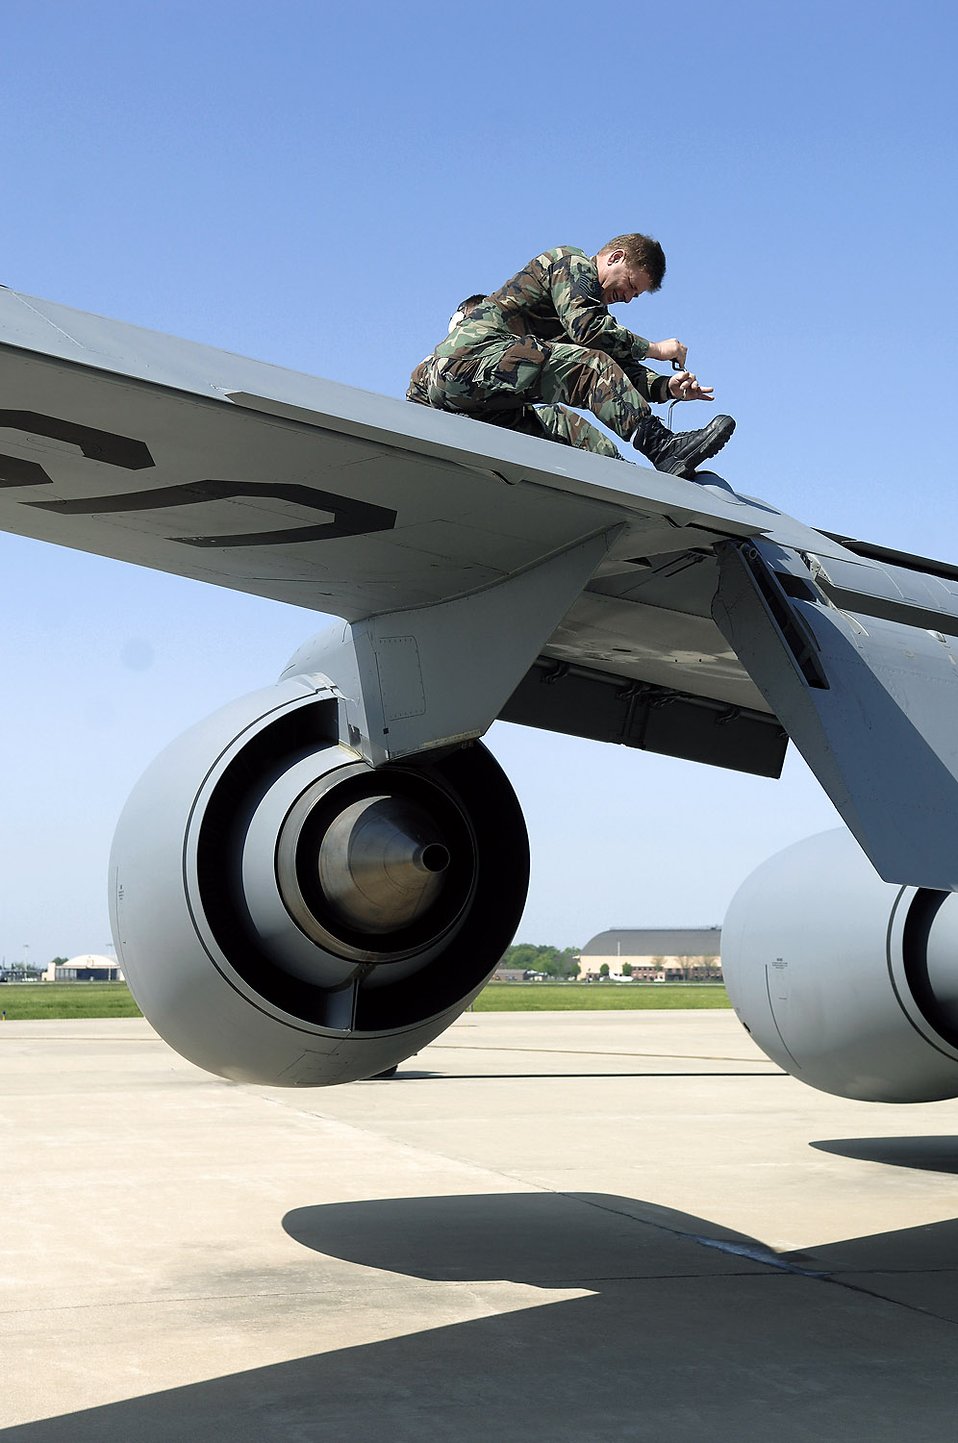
KC-135 Stratotanker

Tech. Sgt. Kris Randolph removes a panel from the left wing of a KC-135R Stratotanker to remove some debris. Sergeant Randolph is a crew chief with the 126th Air Refueling Wing at Scott Air Force Base, Ill.